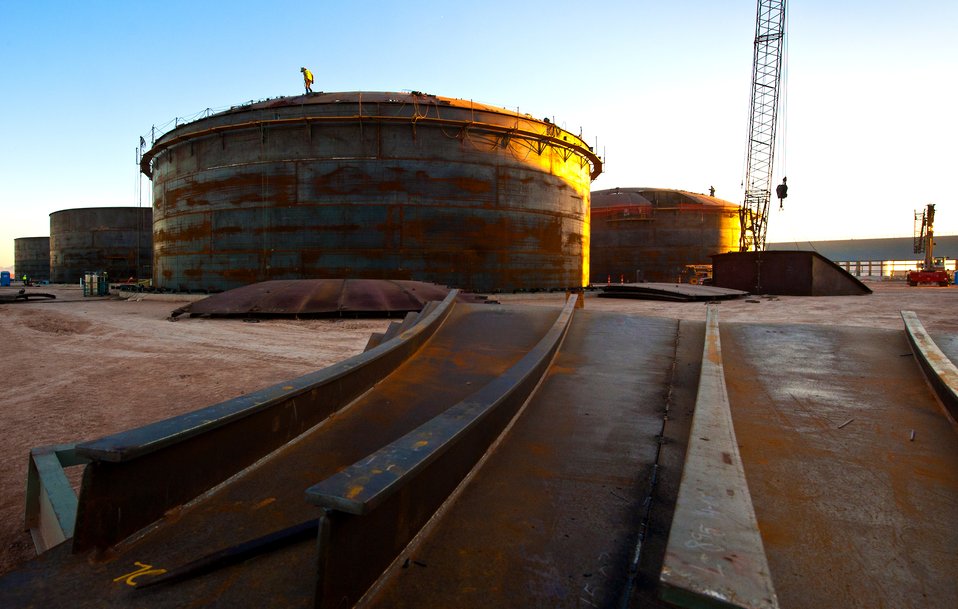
Abengoa Solar

Workers construct one of a dozen molten salt tanks at Abengoa's Solana Plant. The molten salt tanks will generate clean, renewable electricity with conventional steam turbines.